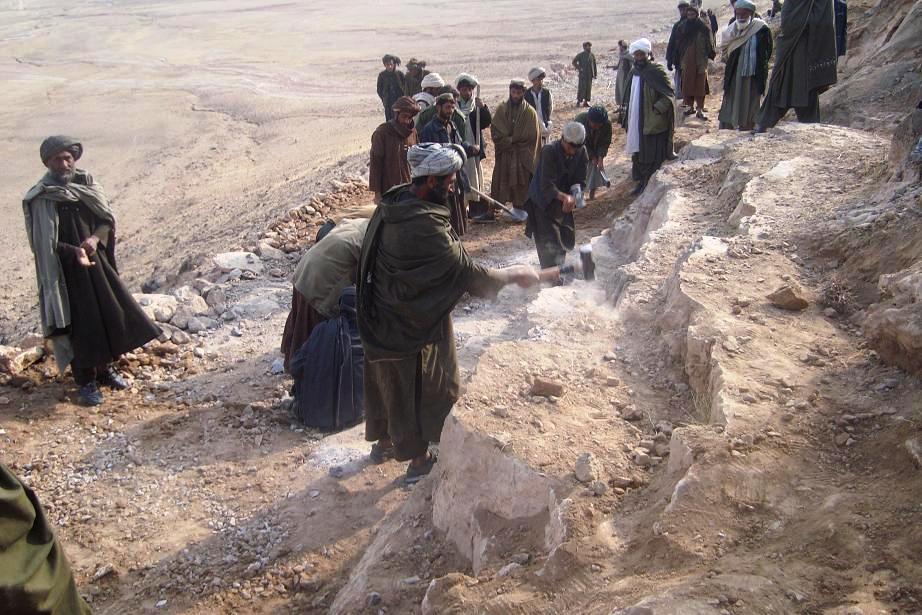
Widening the road